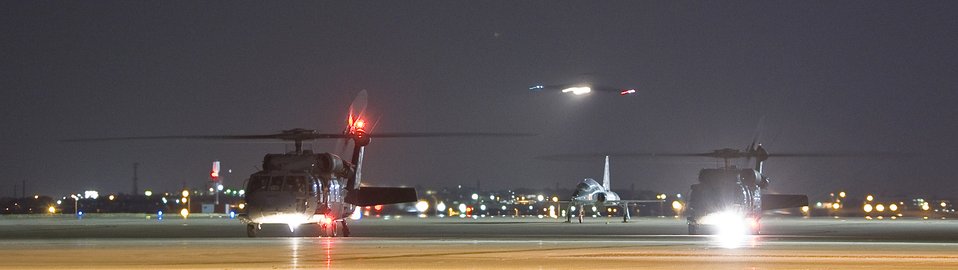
3 contractors rescued in Colombia, return to U.S.

UH-60 Blackhawks of the Texas Army National Guard wait with their engines running as a C-17 Globemaster III with three former hostages arrive July 2 at Lackland Air Force Base, Texas. The C-17 is assigned to Travis AFB, Calif. The C-17 crew is from various including Pope AFB, N.C. and Charleston AFB, S.C.